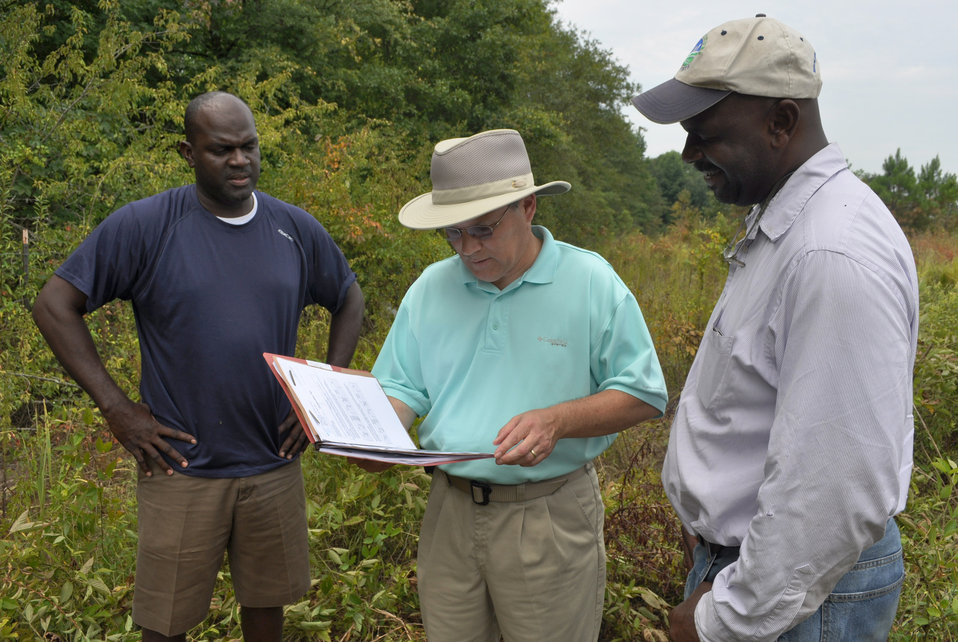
Consult

U.S. Department of Agriculture (USDA) Natural Resource Conservation Service (NRCS) District Conservationist Frank Stephens talks with brothers Martin and Oliver Smith about their forest management plan.